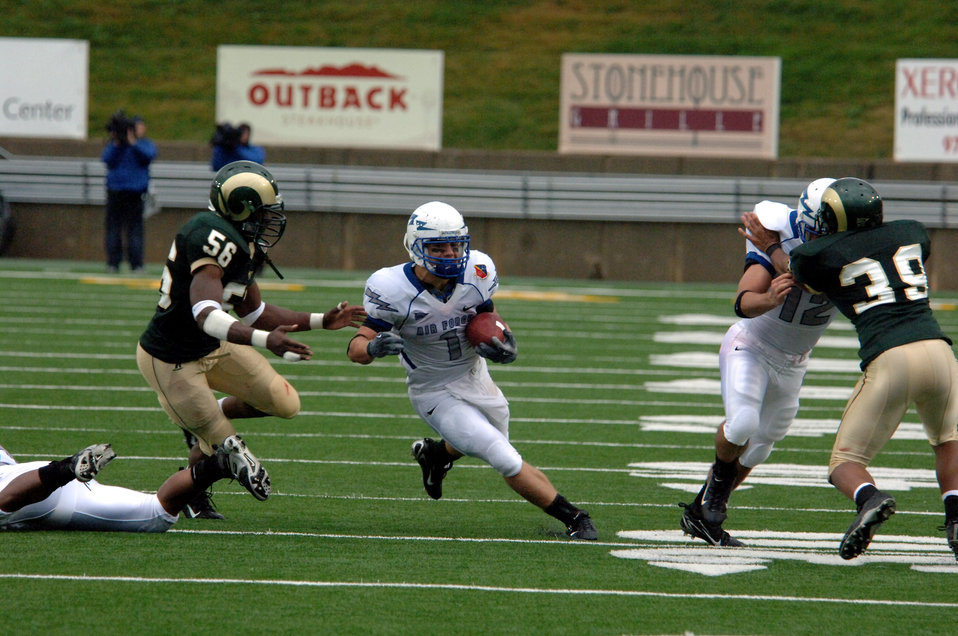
Football: Falcons, Hall run roughshod over CSU

Falcon senior Chad Hall turns the corner on Colorado State linebacker Ricky Brewer during Air Force's 45 -21 win over the Rams Oct. 13 in Fort Collins, Colo. Hall set the Academy's all-time single-game rushing record with 256 yards on 31 carries.